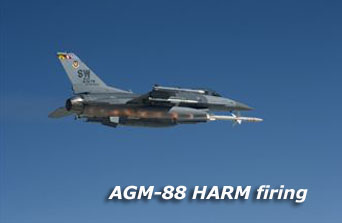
AGM-88 HARM firing

The AGM-88 High-Speed Anti-Radiation Missile, or HARM, was successfully fired from a manned aircraft for the first time in 1976. The missile is an air-to-surface tactical missile designed to seek and destroy enemy radar-equipped air defense systems.